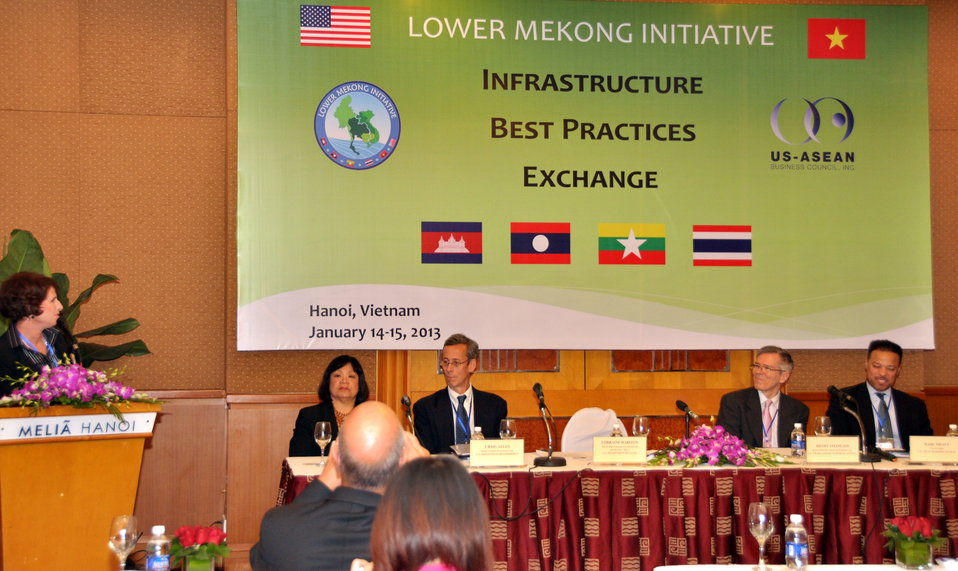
Press Conference at the LMI Infrastructure Best Practices Exchange

January 14, 2013